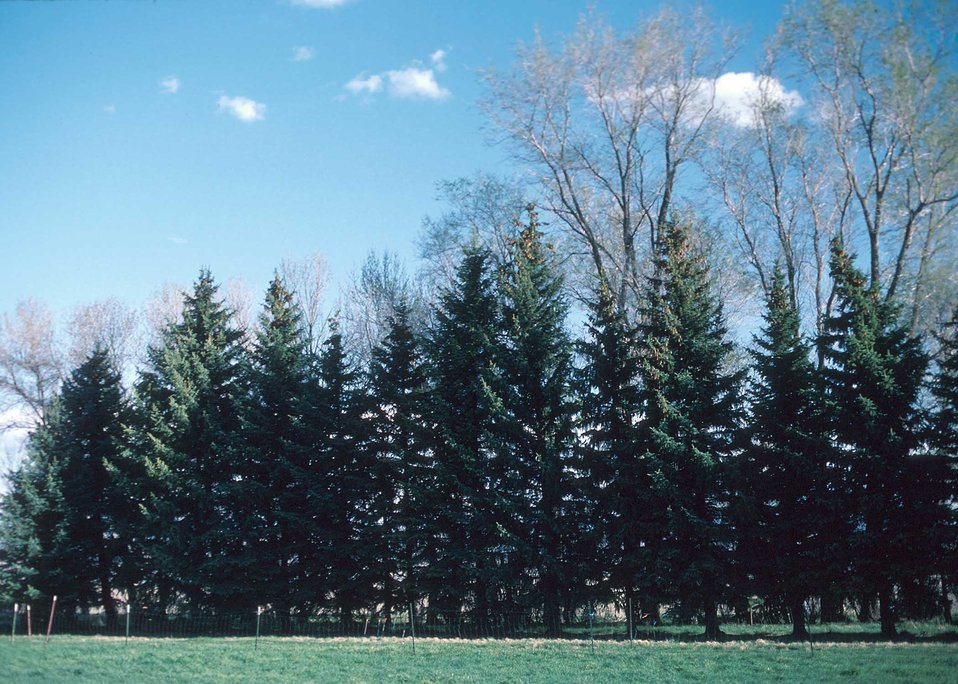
Field windbreak of blue spruce, elm and green ash.